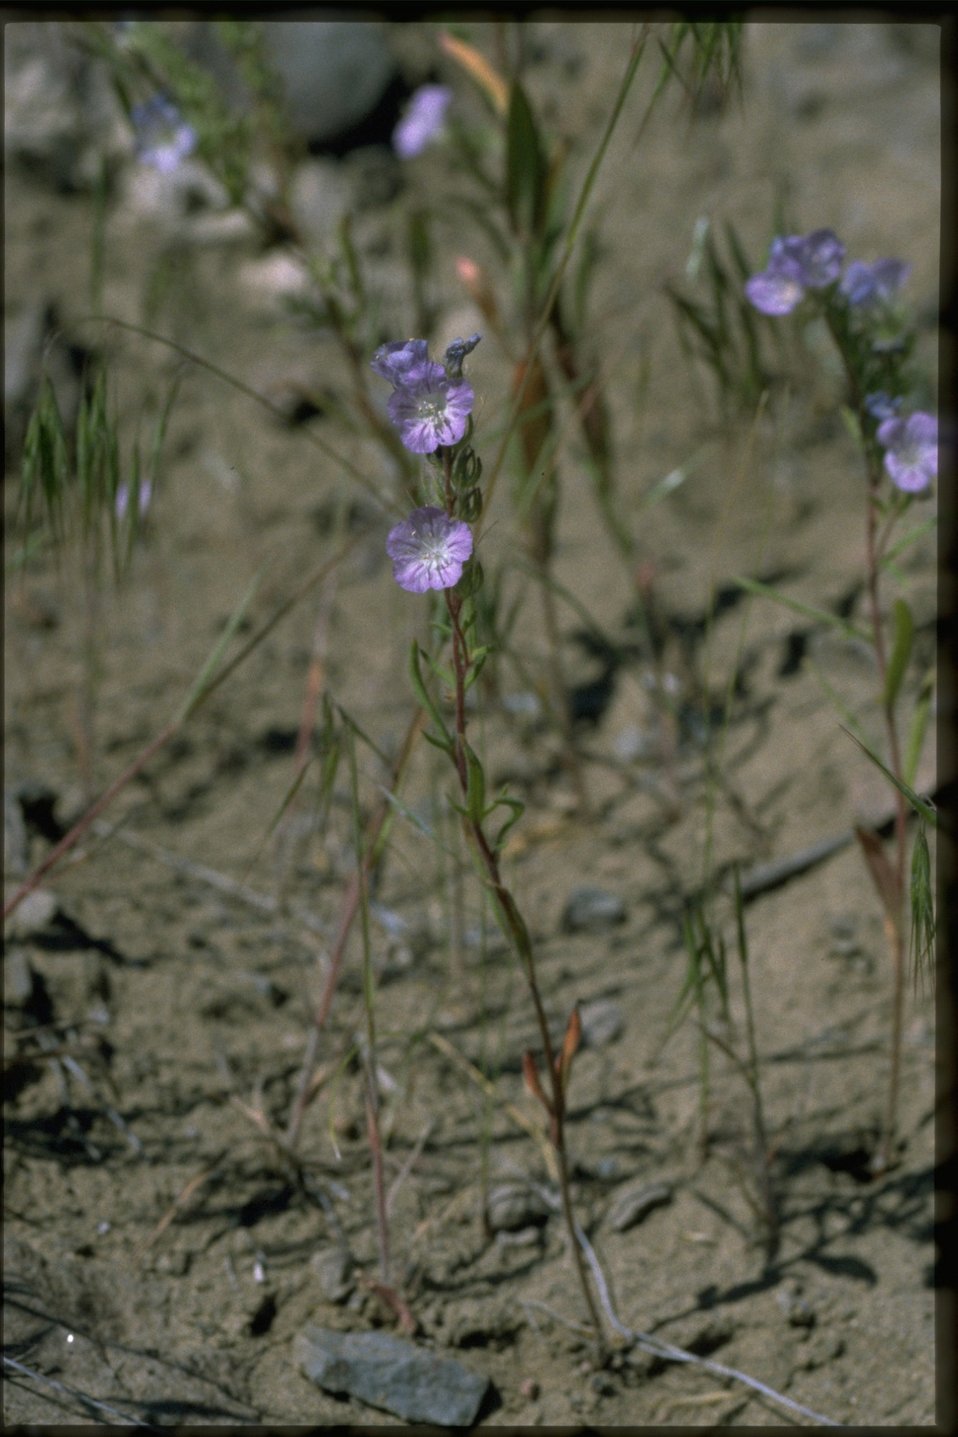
Medium shot of Phocelia.